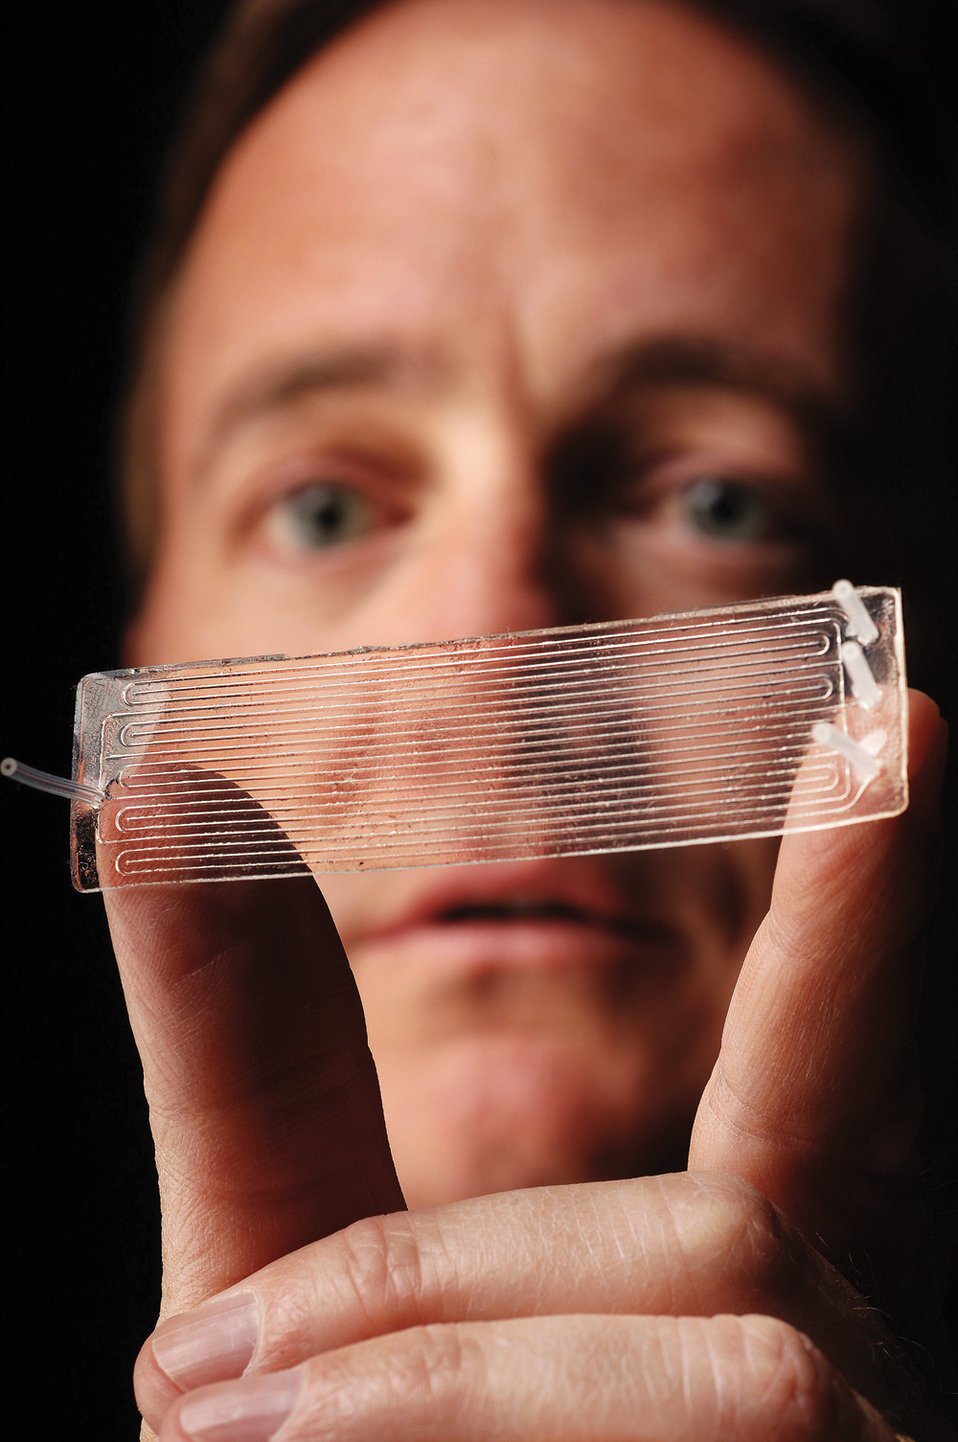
SNL Dennis Roach with a Comparative Vacuum Monitoring (CVM) Sensor showing galleries etched-sensors underside. He lead team that's evaluating some-sensors for Structural Health Monitoring (SHM) aircraft and safety equipment.

The Comparative Vacuum Monitoring sensor is a self-adhesive rubber patch, ranging from dime-to credit-card-sized. The rubber's underside is laser-etched with rows of tiny interconnected channels or galleries to which an air pressure is applied. Any propagating crack in the materials under the sensor breaches the galleries and the resulting change in pressure in monitored. The sensors are made by Structure Monitoring Systems, Inc. (SMS) of Australia, are in expensive, reliable, durable, and easy to apply. They provide equal or better sensitivity than is achievable with conventional inspection methods. Besides, aircraft, SHM techniques could monitor the structural well-being of spacecraft, weapons, rail cars, bridges, oil recovery equipment, buildings, armored vehicles, ships, wind turbines, nuclear power plants, and fuel tanks in hydrogen vehicles.